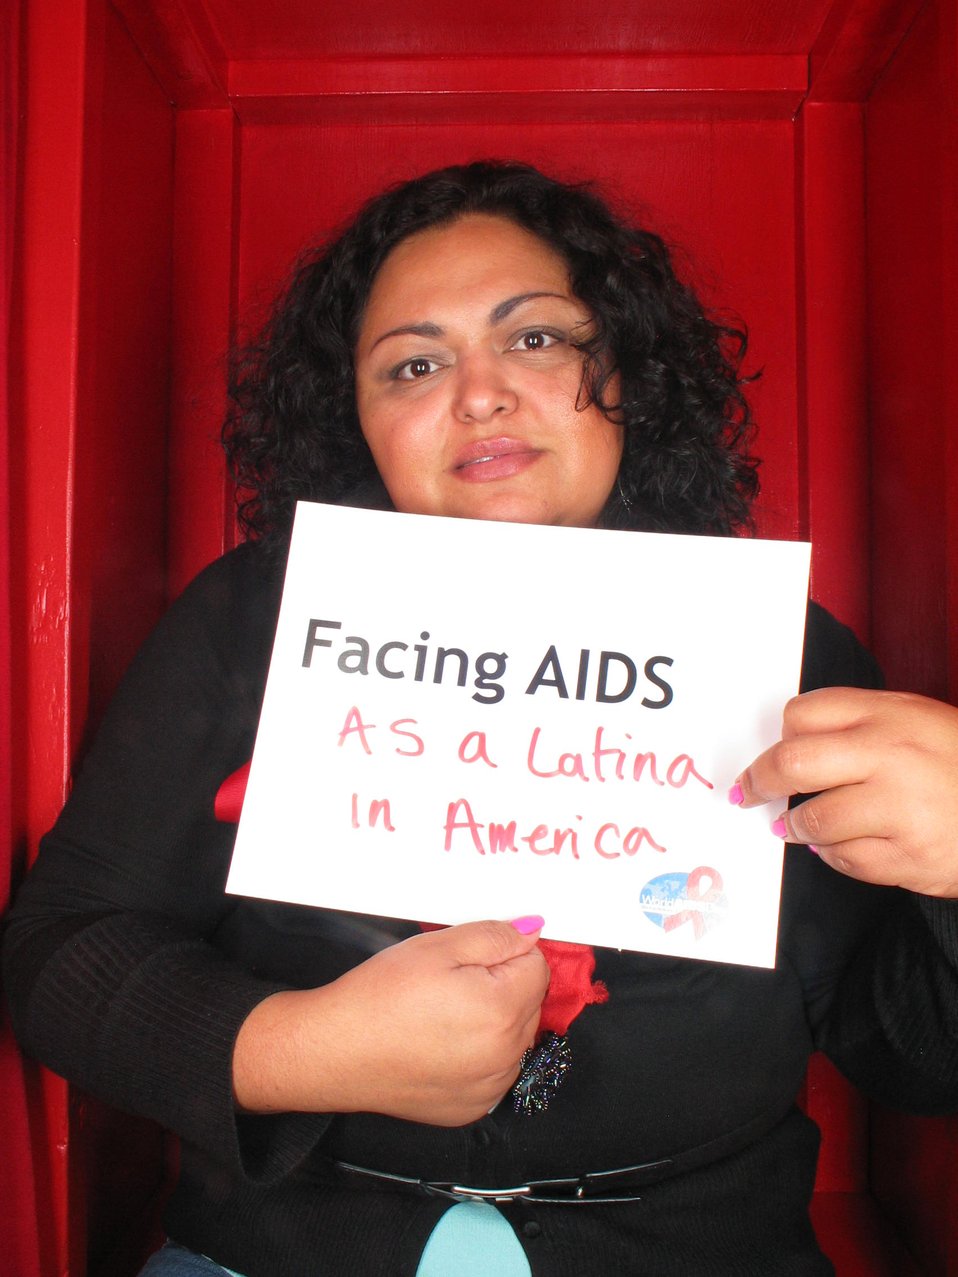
Facing AIDS as a latina in America.